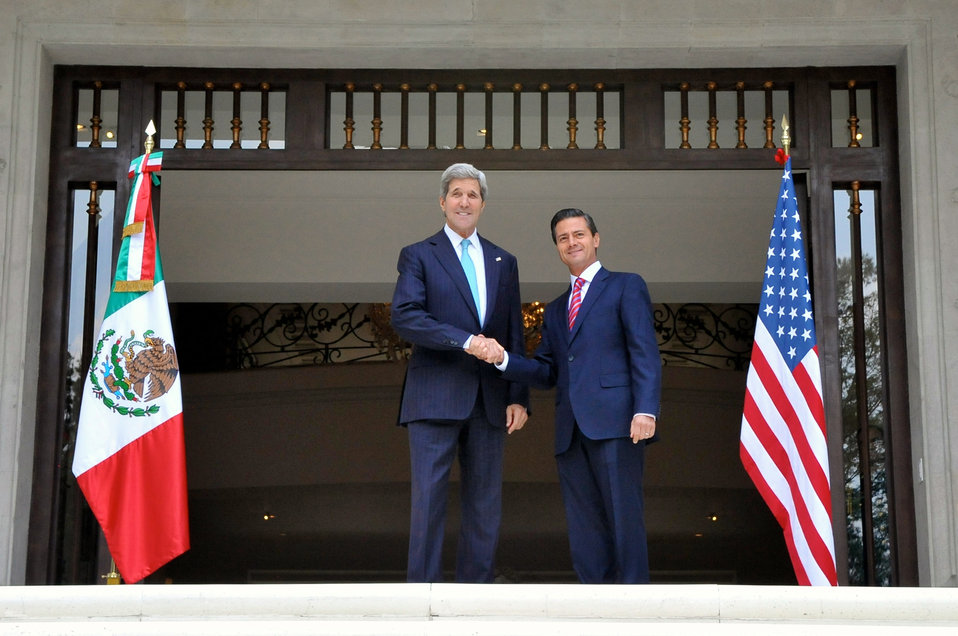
Secretary Kerry, Mexican President Peña Nieto Pose at Los Pinos in Mexico City

U.S. Secretary of State John Kerry and Mexican President Enrique Peña Nieto shake hands for photographers on the front steps of Los Pinos, the presidential residence and office compound, before a bilateral meeting in Mexico City on May 21, 2014.